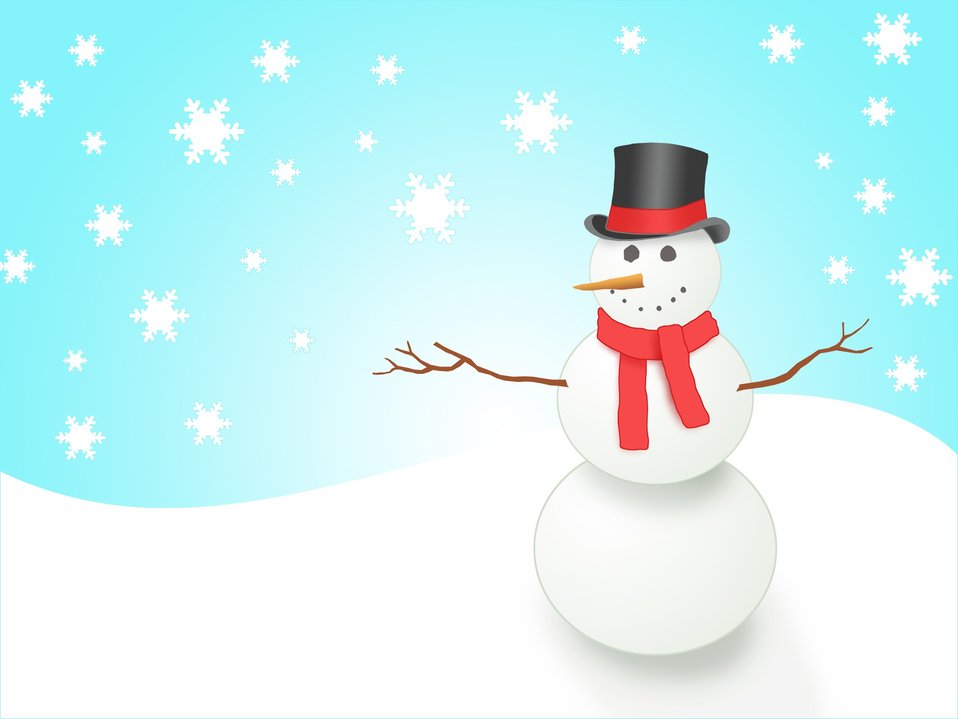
Snowman with snowflakes

Illustration of snowman with wintry snowflakes.